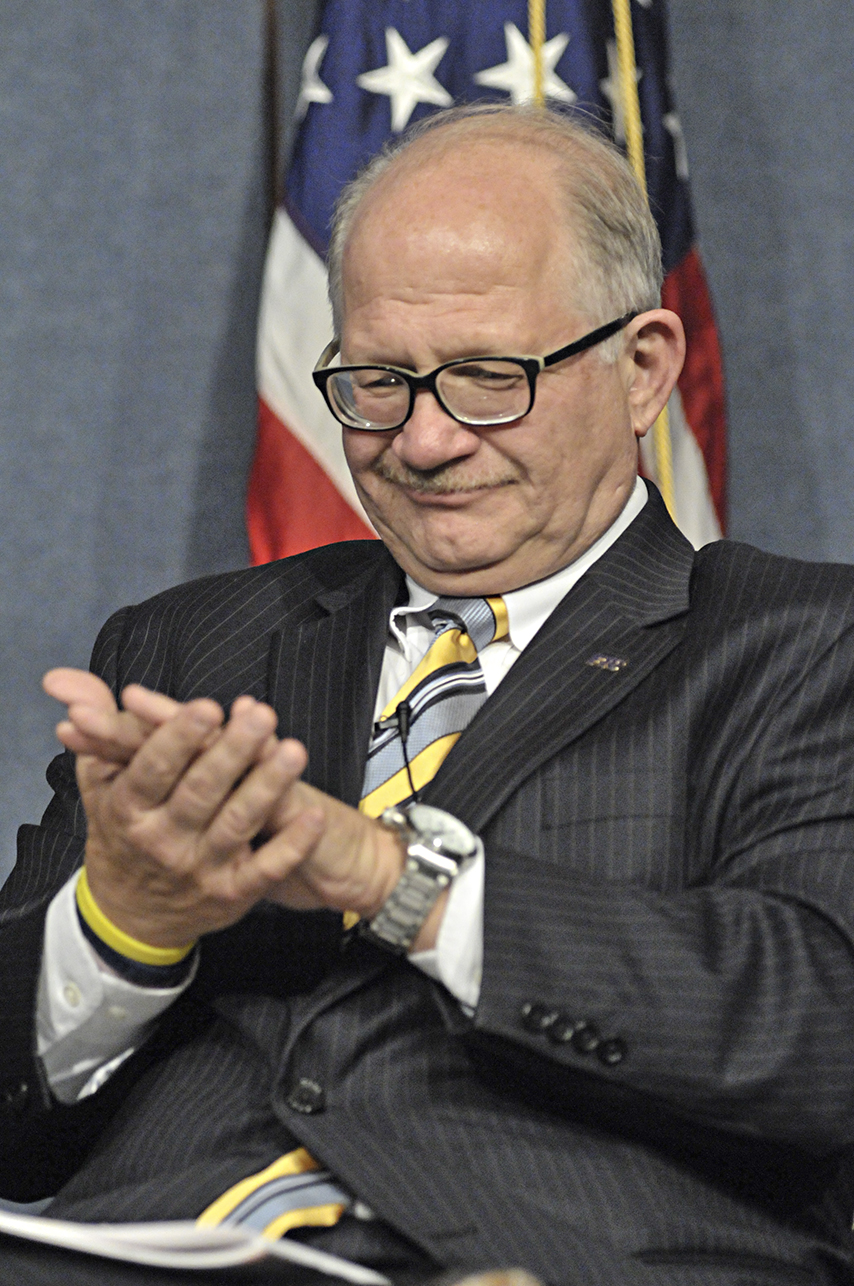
Panel: Increasing Minority Participation in the Energy Sector

Dr. Mark Rosenberg, President of Florida International University, speaks at the launch of Minorities in Energy Initiative on September 24, 2013.